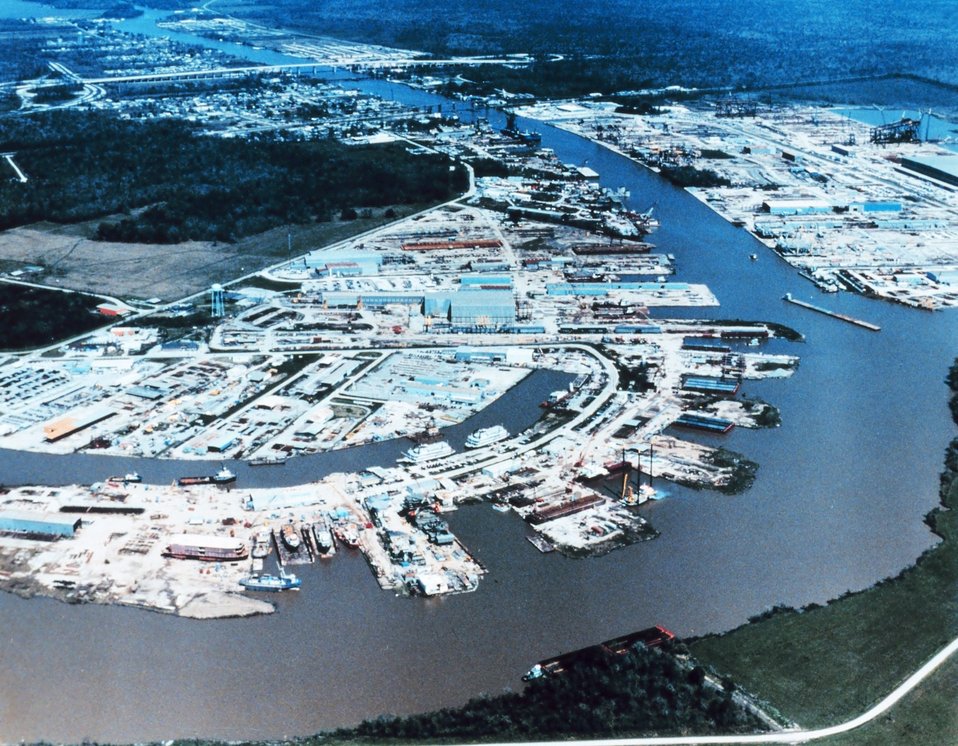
2942 North Latitude 9100 West Longitude.